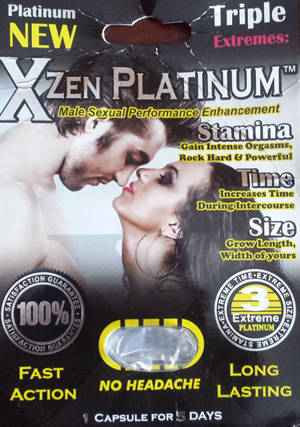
RECALLED – Dietary Supplement for Sexual Enhancement

January 9, 2014 – Product Recall – Midwest Wholesale Issues Voluntary Recall of Boost Ultra, XZone Gold, Sexy Monkey, Triple MiracleZen Platinum, Magic for Men, 'New' Extenze, and New XZen Platinum Marketed as a Dietary Supplements Due to the Presence of Undeclared Drug Ingredients.